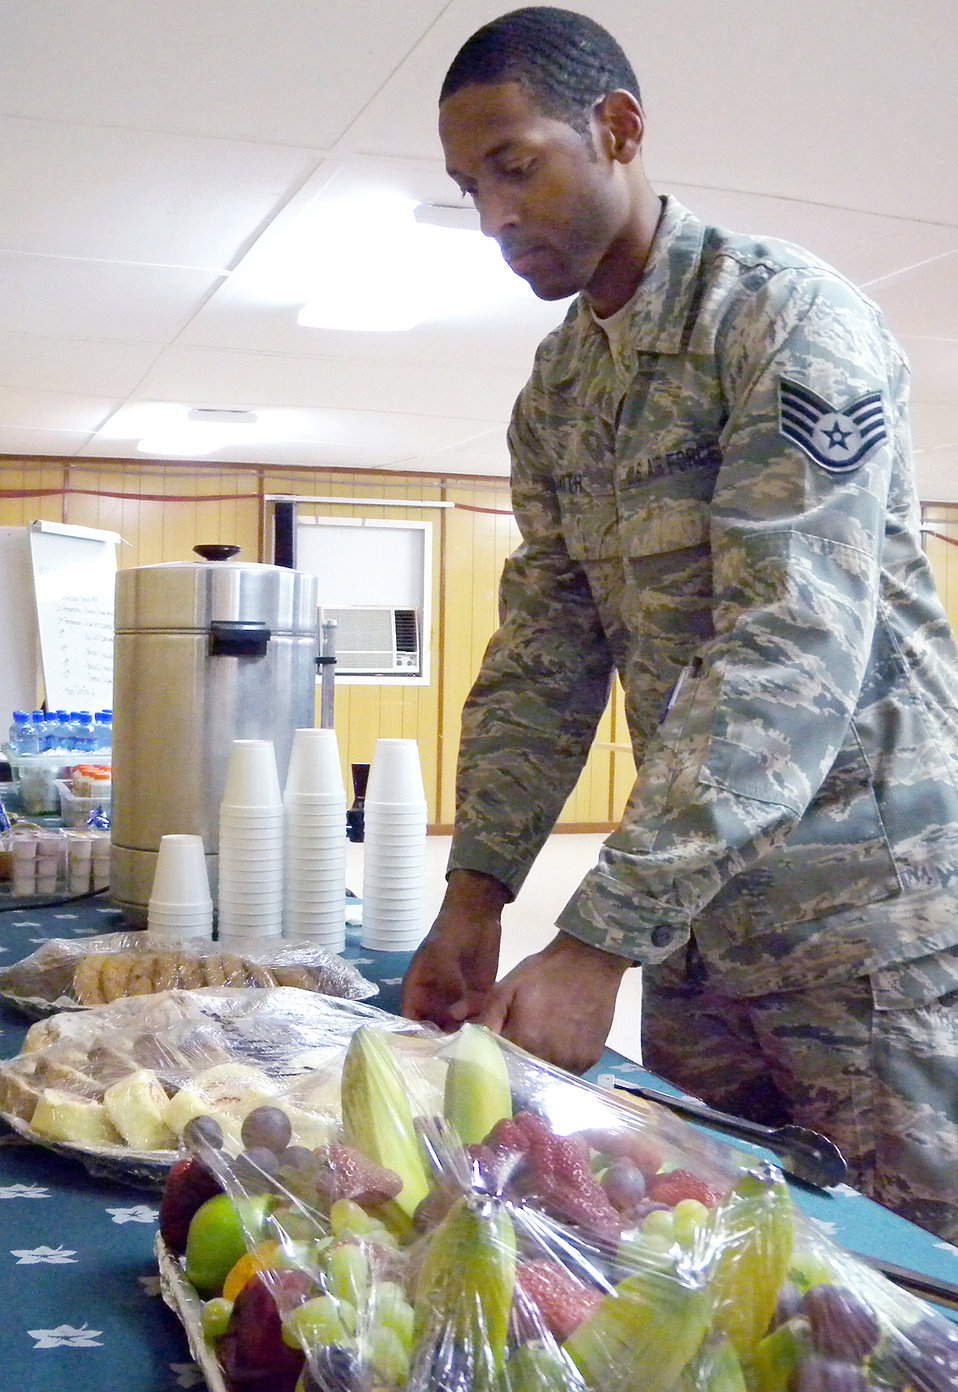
Freedom Conference Center NCOs boost morale

Staff Sgt. Michael Smith prepares a snack area for conference participants May 12 at the Freedom Conference Center at an undisclosed base in Southwest Asia. Sergeant Smith is a 379th Expeditionary Force Support Squadron assistant facility manager.